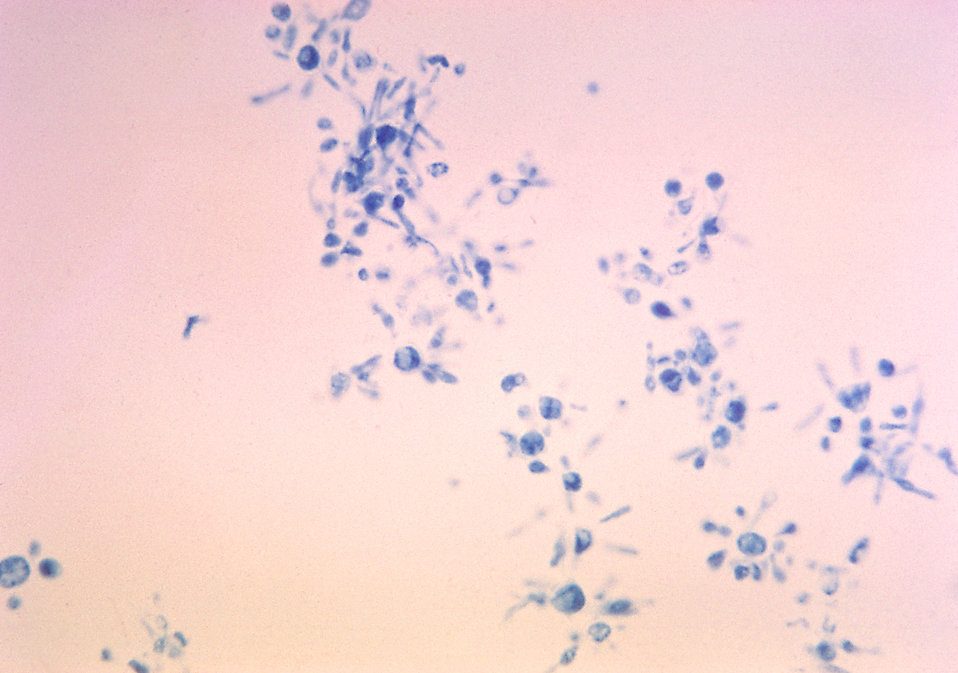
This photomicrograph depicts budding cells of the fungus Paracoccidioides brasiliensis during its yeast phase.